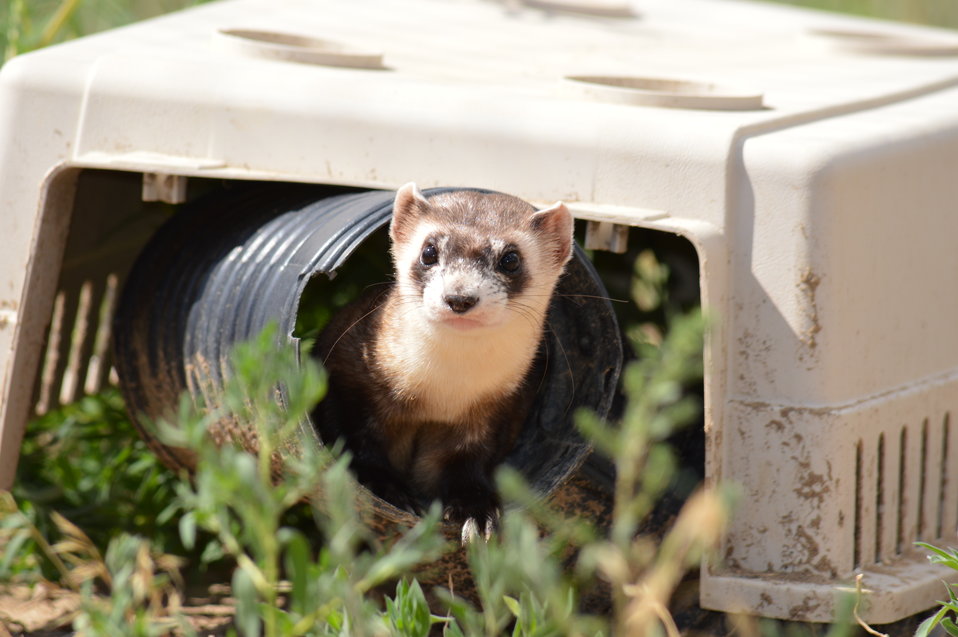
Interns visit the NBFFCC

In the summer of 2012, USFWS Region 6 interns visited the National Black-footed Ferret Conservation Center (NBFFCC) in Colorado to learn how the program reintroduces the endangered Black-footed ferret back into its native habitat.